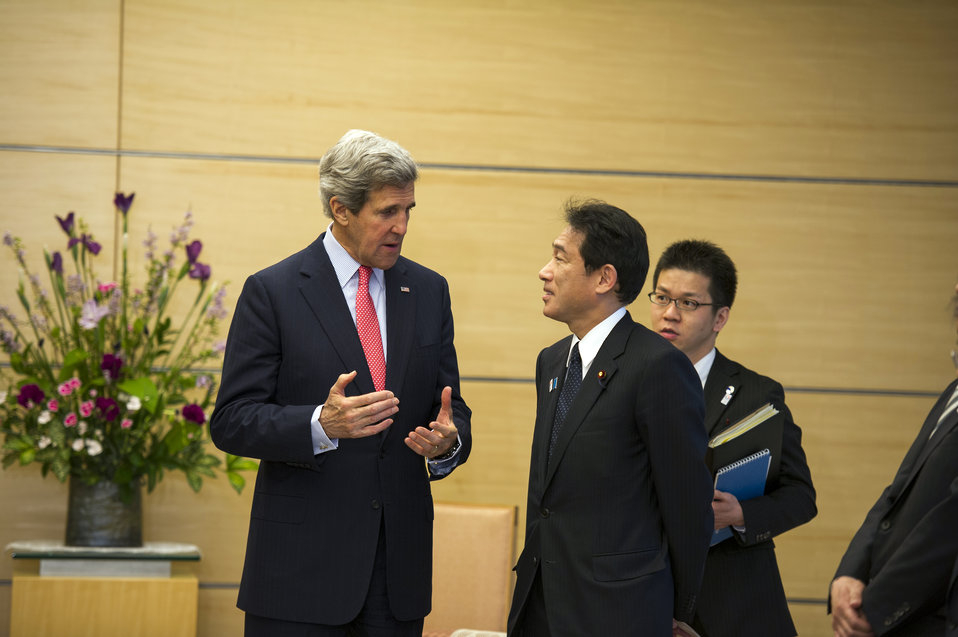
Secretary Kerry Talks With Japanese Foreign Minister Kishida

U.S. Secretary of State John Kerry talks with Japaneses Minister for Foreign Affairs Fumio Kishida before his bilateral meeting with Prime Minister Shinzo Abe during his visit to Tokyo, Japan, on April 15, 2013.